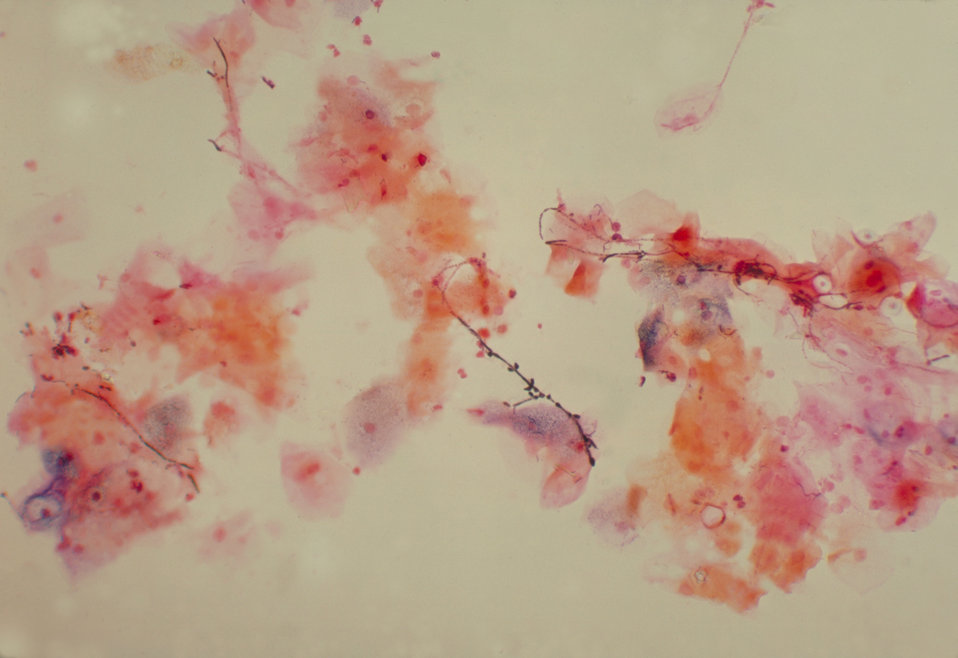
This is a photomicrograph of a vaginal smear identifying Candida albicans using gram-stain technique.